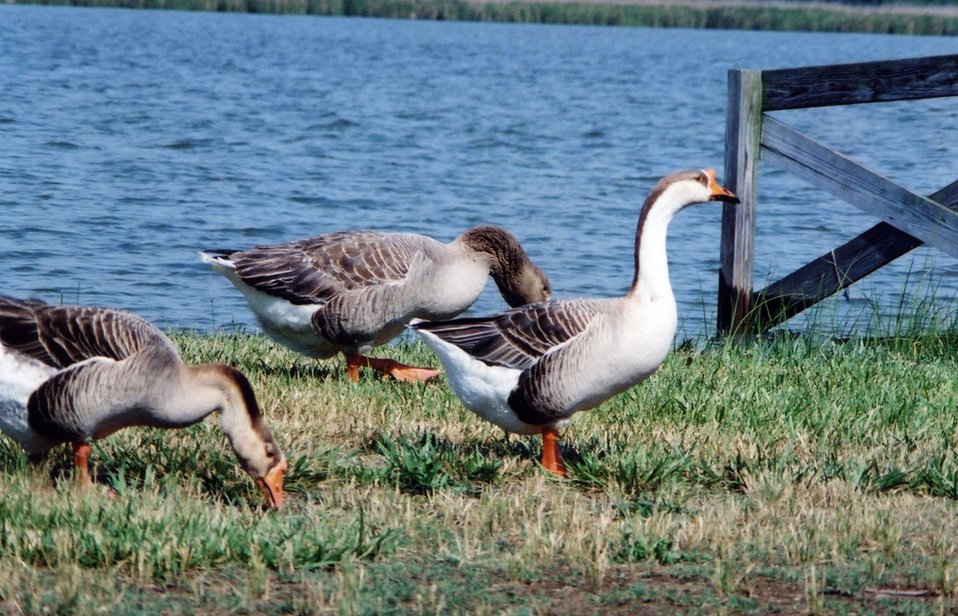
Non-native Chinese geese along the Patuxent River.